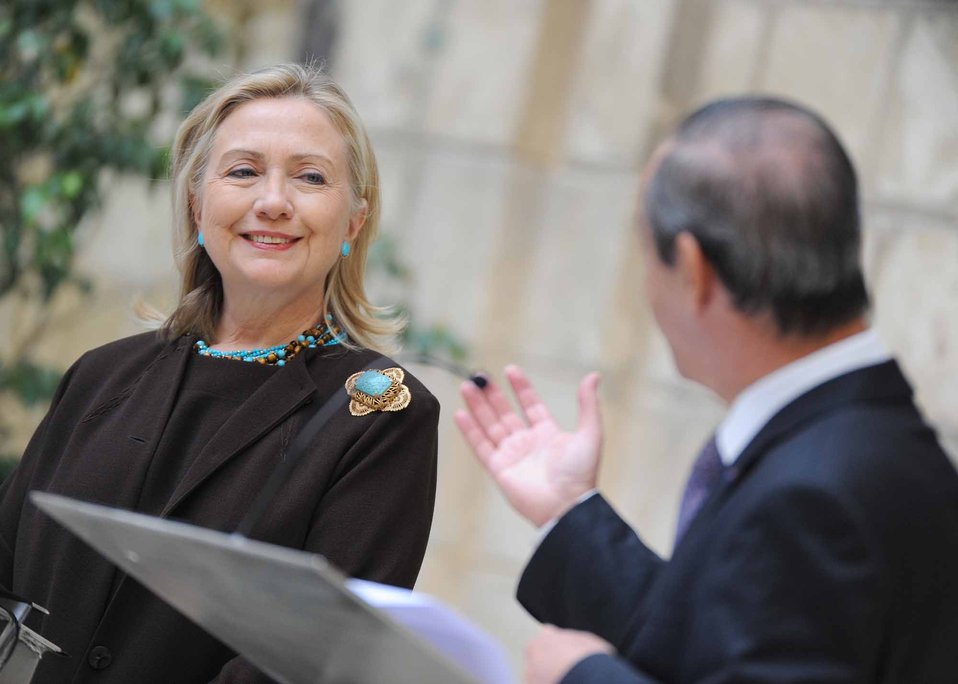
Secretary Clinton and Maltese Prime Minister Gonzi Hold a Joint Press Conference

U.S. Secretary of State Hillary Rodham Clinton and Maltese Prime Minister Lawrence Gonzi hold a joint press conference at the Auberge de Castille in Valletta, Malta, on October 18, 2011.